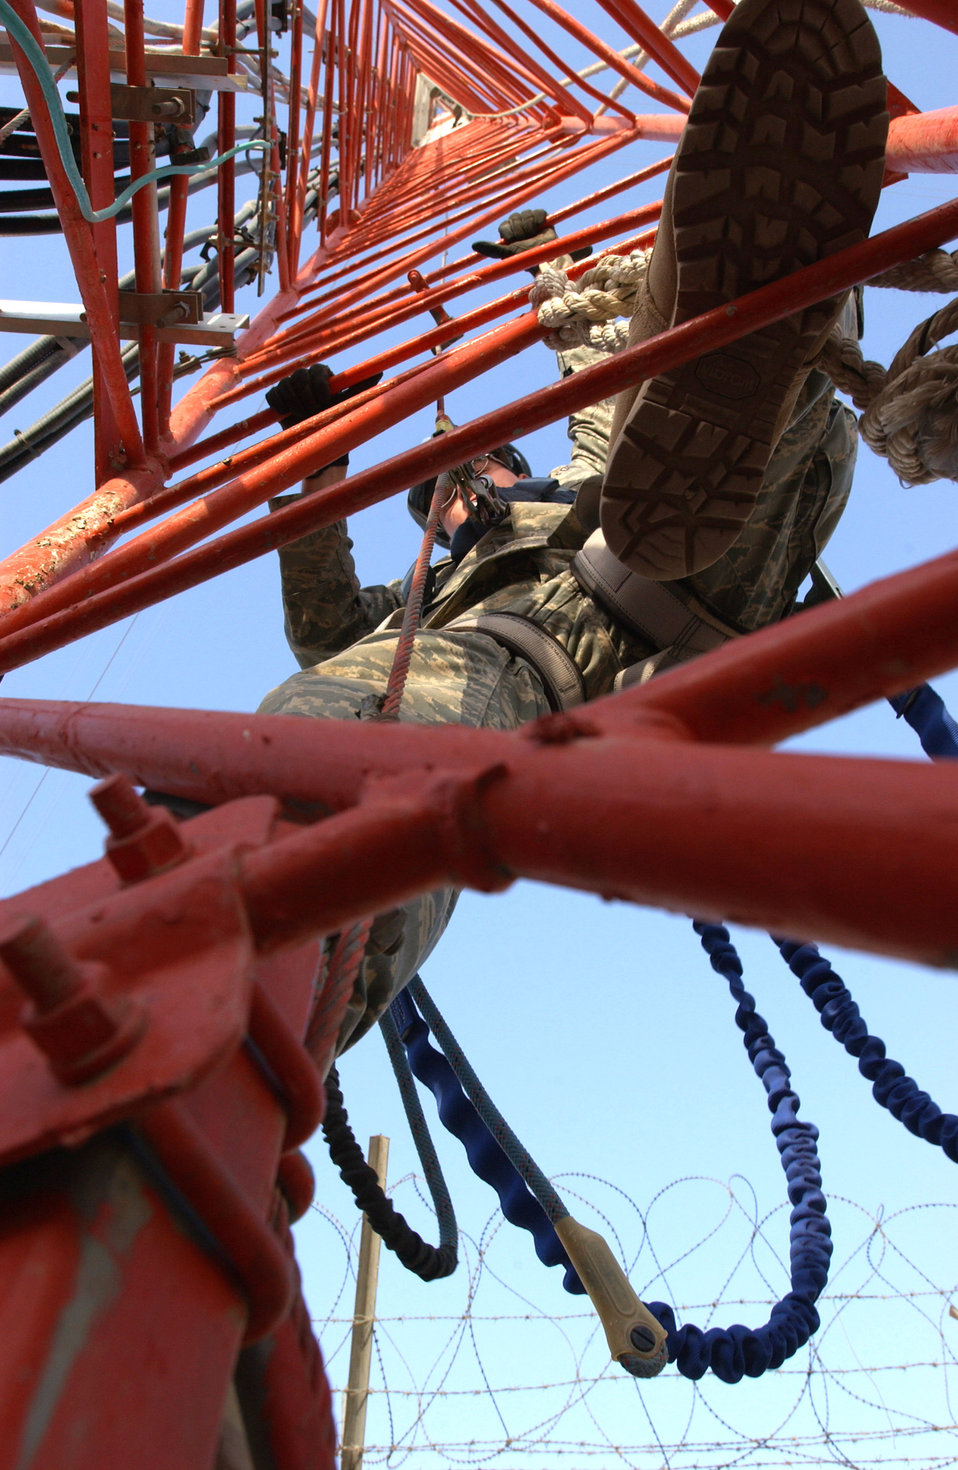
Going up?

Airman 1st Class Cody Bowlan starts a 50-foot climb up a communication system tower Nov. 26. Some Airmen from the 407th Expeditionary Communications Squadron at Ali Base, Iraq, earned tower-climbing certifications from a headquarters team there to do preventive maintenance on the system.